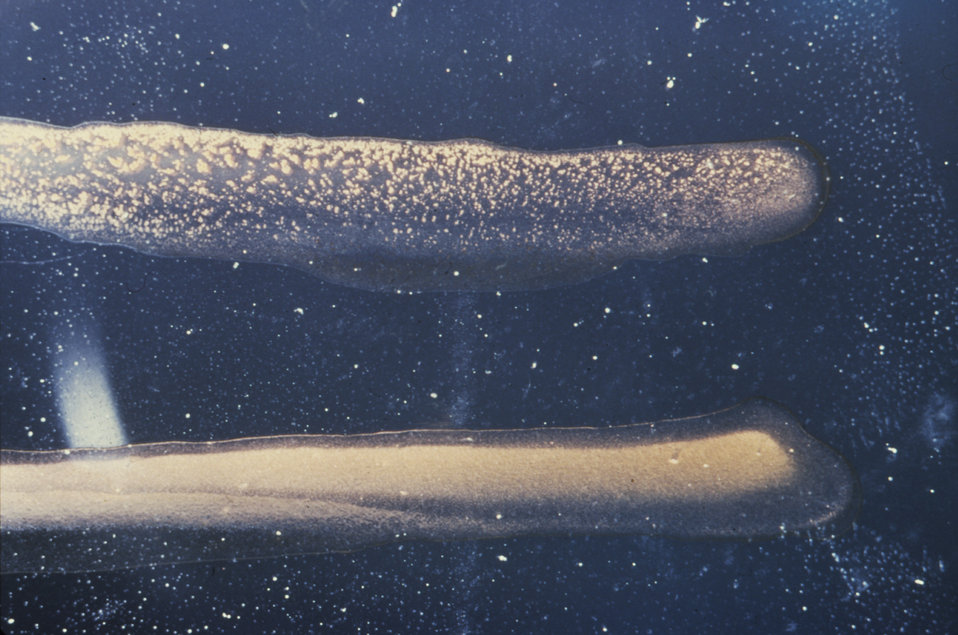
This agglutination test was used for the isolation and identification of Vibrio cholerae, the causal agent of cholera.